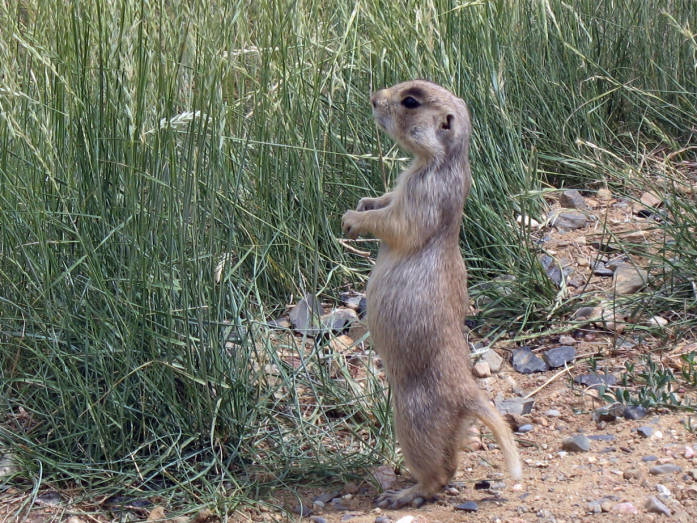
white-tailed prairie dog